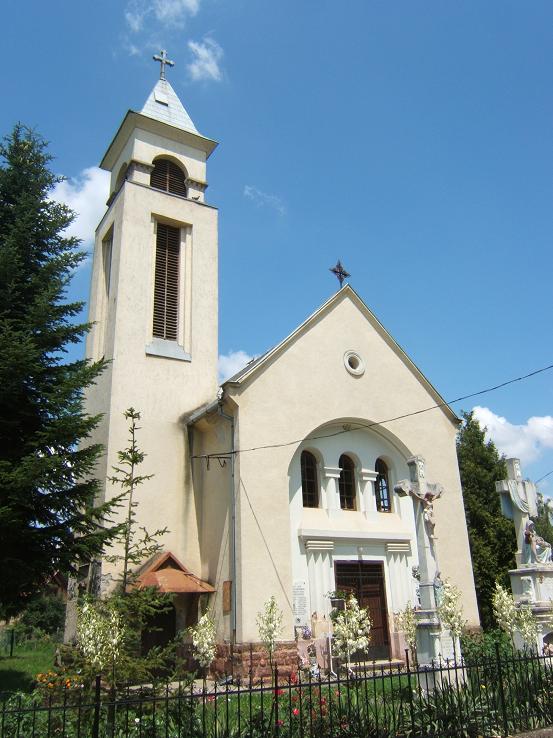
Magyar: Hajmási templom